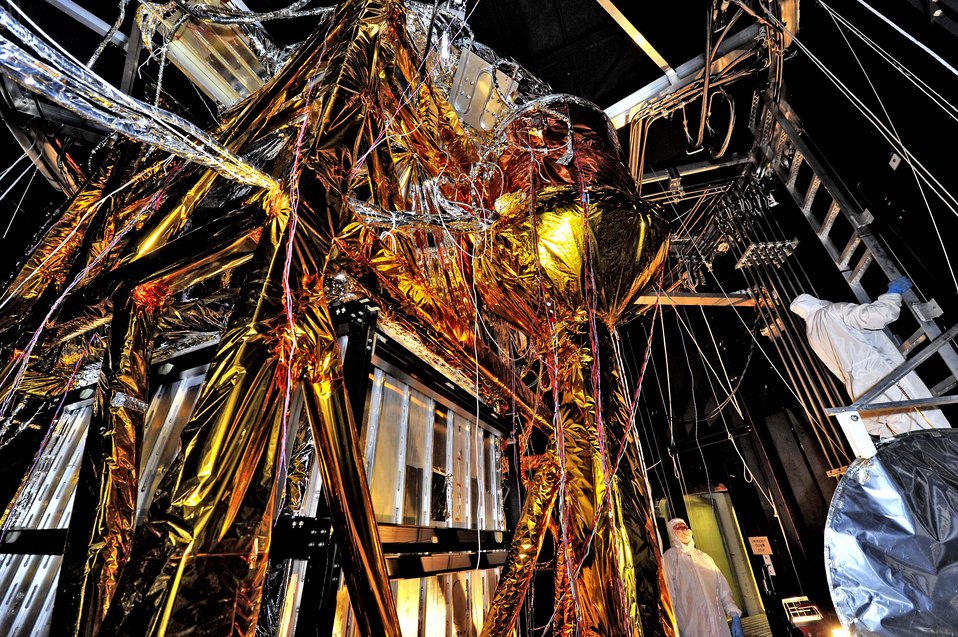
The Webb Telescope's 'Golden Spider'

The James Webb Space Telescope is a large, infrared-optimized telescope that is anticipated to launch in 2018. The spider-like sheets and tubes of wires you see here are the Optical Telescope Simulator (OSIM) for the telescope itself. OSIM will help scientists prepare the Webb telescope for flight by generating a beam of light that the telescope optics will feed into its actual flight instruments. In this photo, engineers have blanketed the OSIM with special insulating material to help control its temperature while it goes into the deep freeze testing of the Space Environment Simulator at NASA's Goddard Space Flight Center in Greenbelt, Maryland. The simulator will mimic the environment that the telescope will experience in operational orbit, more than 1 million miles from Earth. | Photo credit: Chris Gunn/NASA.

Photo of the Week: September 14, 2012